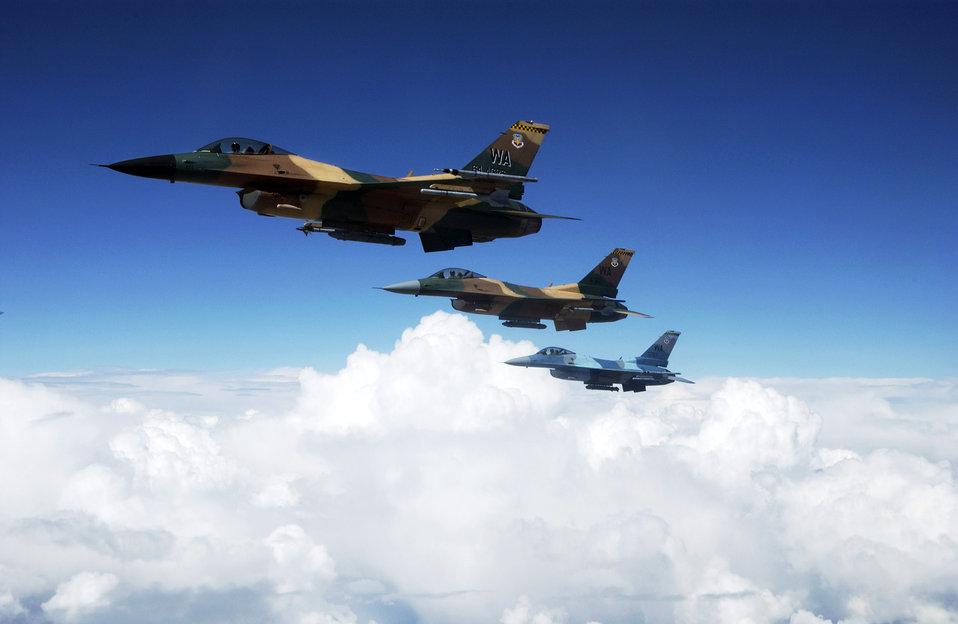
Flying colors

OVER NEVADA -- Three F-16 Fighting Falcons from the 64th Aggressor Squadron at Nellis Air Force Base, Nev., wait for a final aircraft to finish refueling so they can continue their mission during a Red Flag mission recently. The F-16s have a unique paint scheme to match their role as simulated enemy Mig aircraft during quarterly Red Flag exercises.